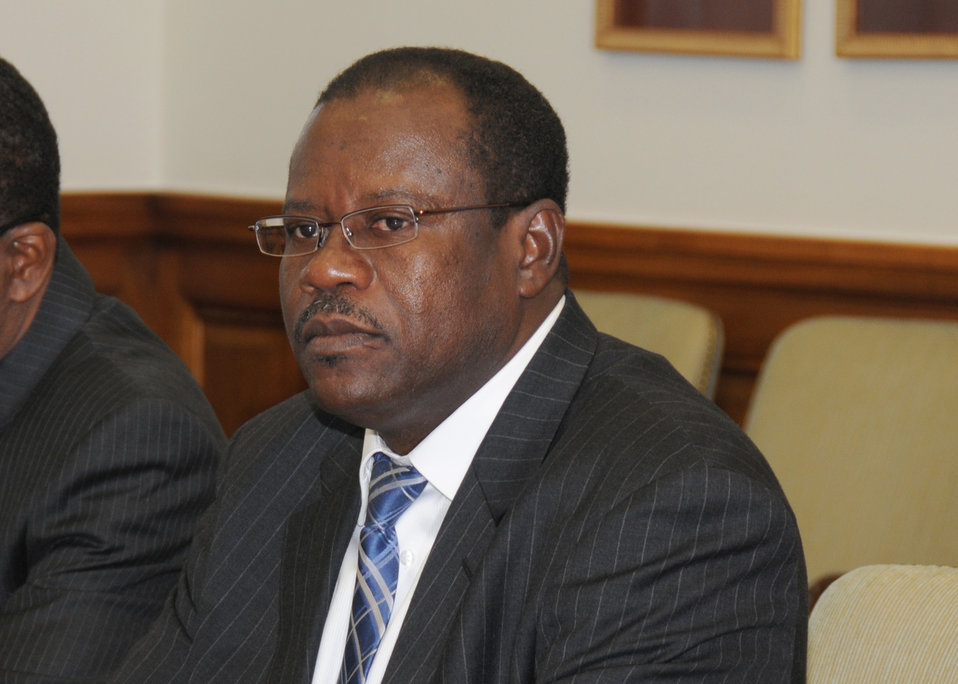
Haitian Agricultural Minister Joanas Guèx in a meeting with Agriculture Secretary Tom Vilsack on Thursday, April 15, 2010 at United States Department of Agriculture, Washington, D.C. USDA Photo 10di1313-09